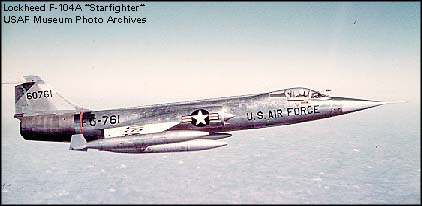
F-104A Starfighter

1950's -- F-104A Starfighter. Courtesy photo.